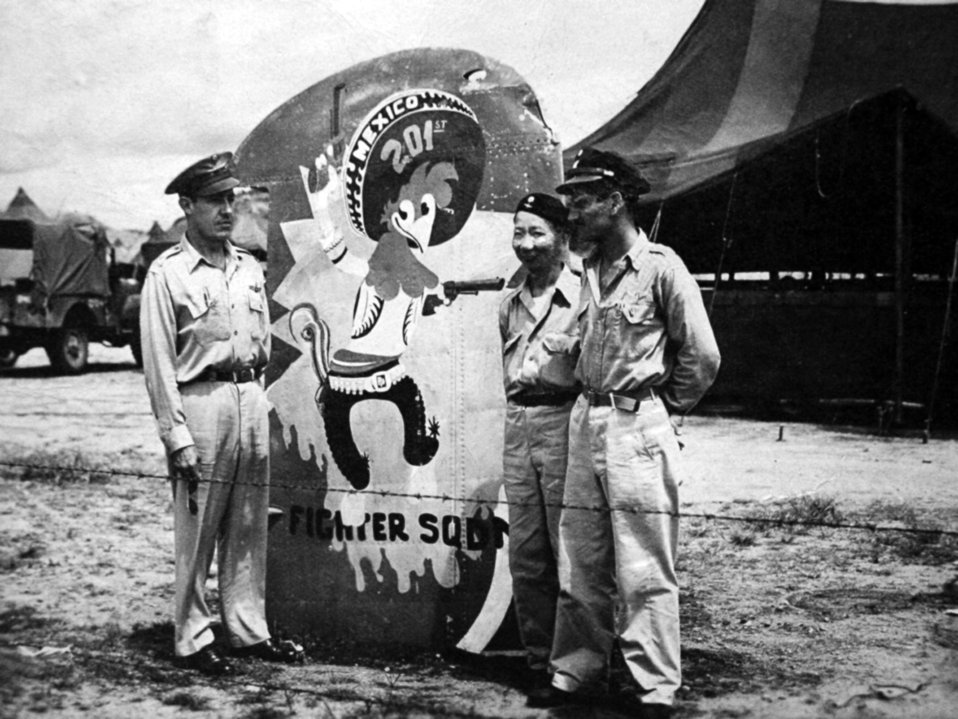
Museum remembers 'Aztec Eagles'

Air Force, Philippine army and Mexican air force members stand near a representation of